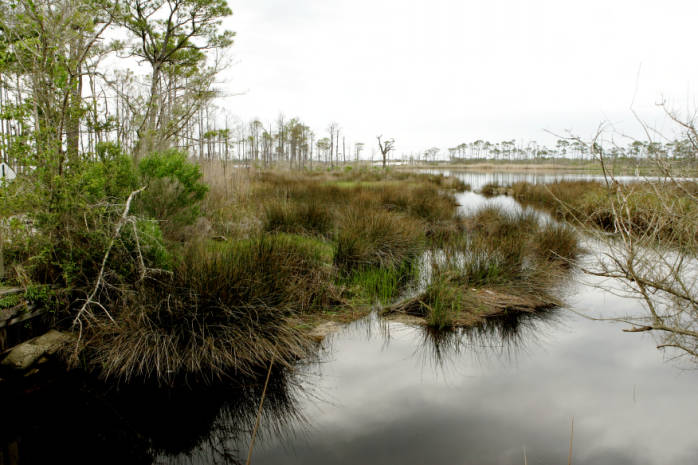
Marshlands, Alabama Credit: USFWS